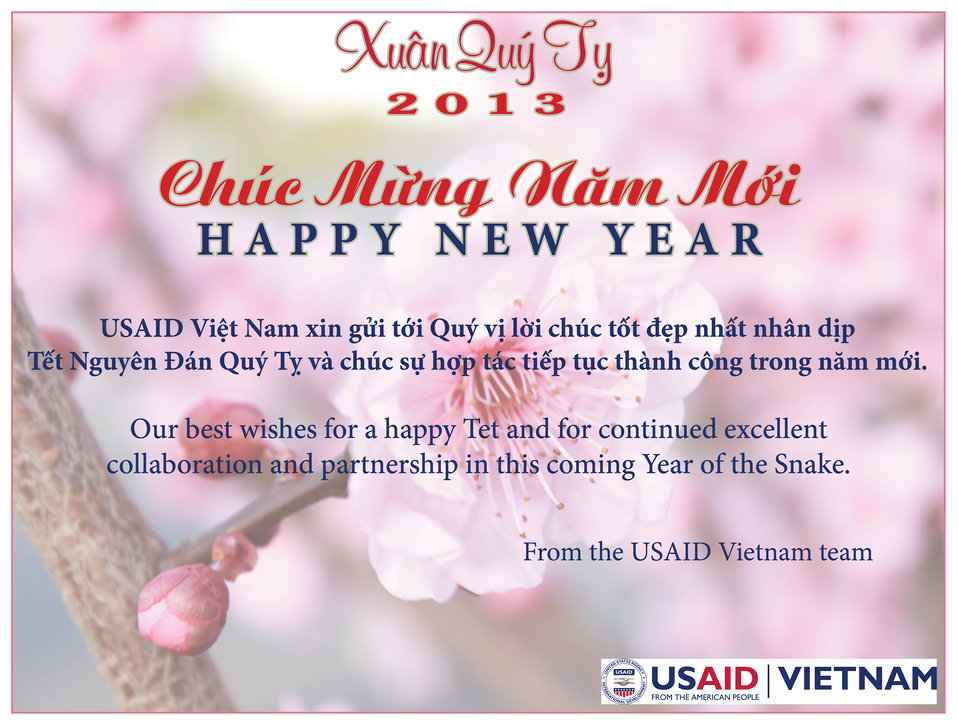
USAID Vietnam Sends Its Wishes for a Happy Tet and 2013

February 2013
USAID Vietnam